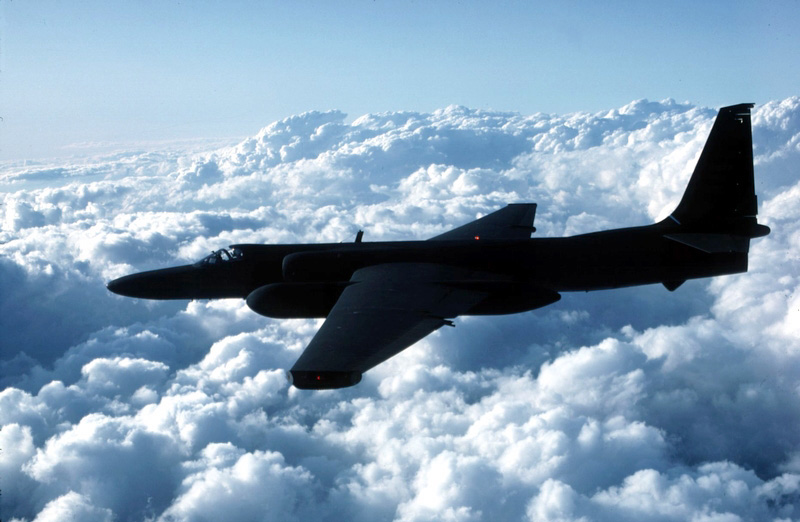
Dragon Lady

FILE PHOTO -- The U-2 provides continuous day or night, high-altitude, all-weather, stand-off surveillance of an area in direct support of U.S. and allied ground and air forces. It provides critical intelligence to decision makers through all phases of conflict, including peacetime indications and warnings, crises, low-intensity conflict and large-scale hostilities.The U-2 is a single-seat, single-engine, high-altitude, reconnaissance aircraft. Long, wide, straight wings give the U-2 glider-like characteristics. It can carry a variety of sensors and cameras, is an extremely reliable reconnaissance aircraft, and enjoys a high mission completion rate. Because of its high altitude mission, the pilot must wear a full pressure suit. The U-2 is capable of collecting multi-sensor photo, electro-optic, infrared and radar imagery, as well as performing other types of reconnaissance functions.